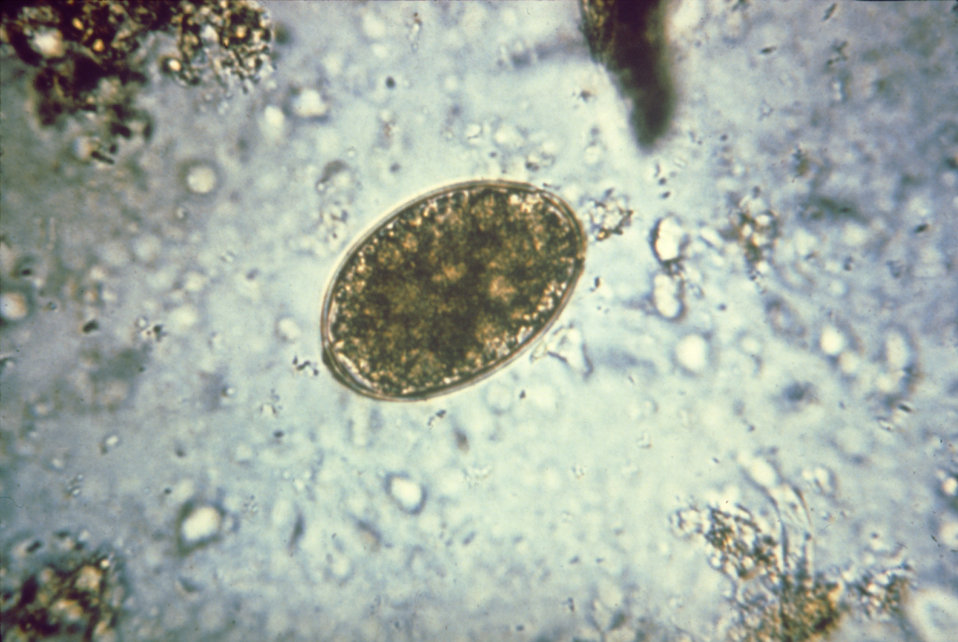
This photomicrograph depicts an egg from the cestode, Diphyllobothrium latum.